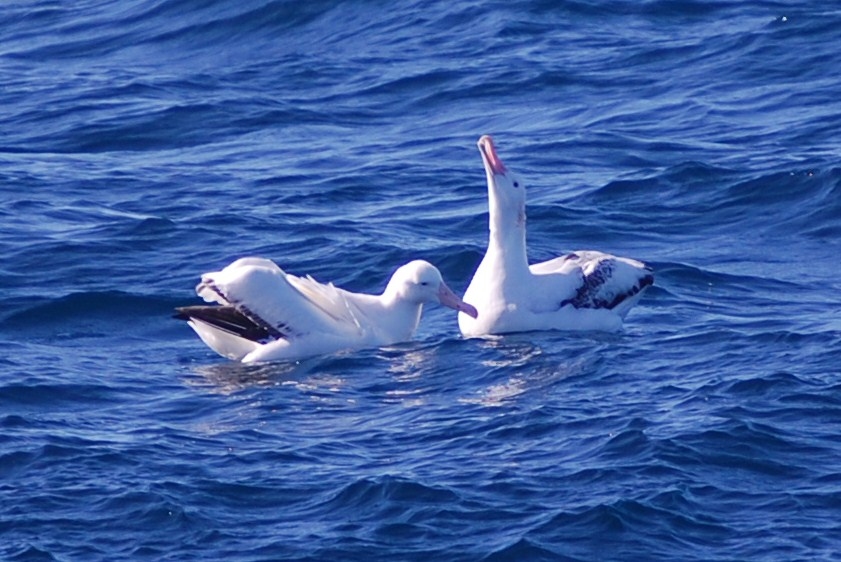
Wandering albatross.